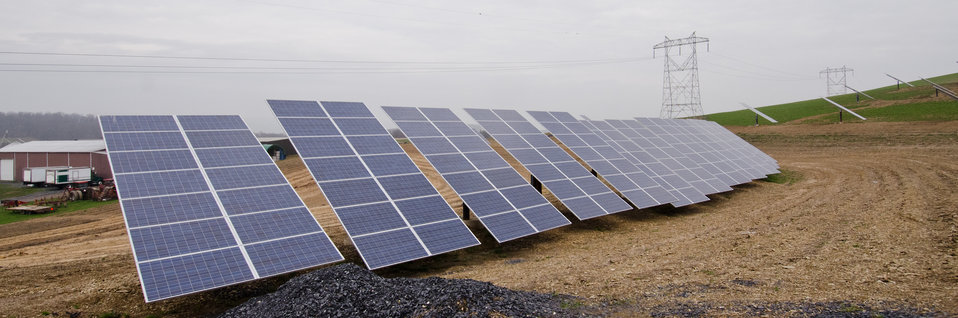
Heidel Hollow Farms, on Wednesday, April 20, 2011, has been a family owned farm since 1852 and is currently an 1,800 acre operation in Germansville, PA. Led by David Fink, President of Heidel Hollow Farms, they mainly produce and compact hay for exportand grow produce on 300 acres for local. With the financial help of the U.S. Department of Agriculture (USDA) an 896 panel solar array was recently installed on non farmable diversion ditches. Rated at 200 kilowatts, they project 240 megawatts of electricity to be produced each year, providing up to 70% of the farms electrical needs. Additionally, USDA financial assistance made it possible to replace the hay compactor’s diesel engines with clean low-maintenance, low operating cost electric motors to power the compactor's hydraulic system. The compactor increases the density of baled hay by two and half times for more efficient shipping to overseas customers.